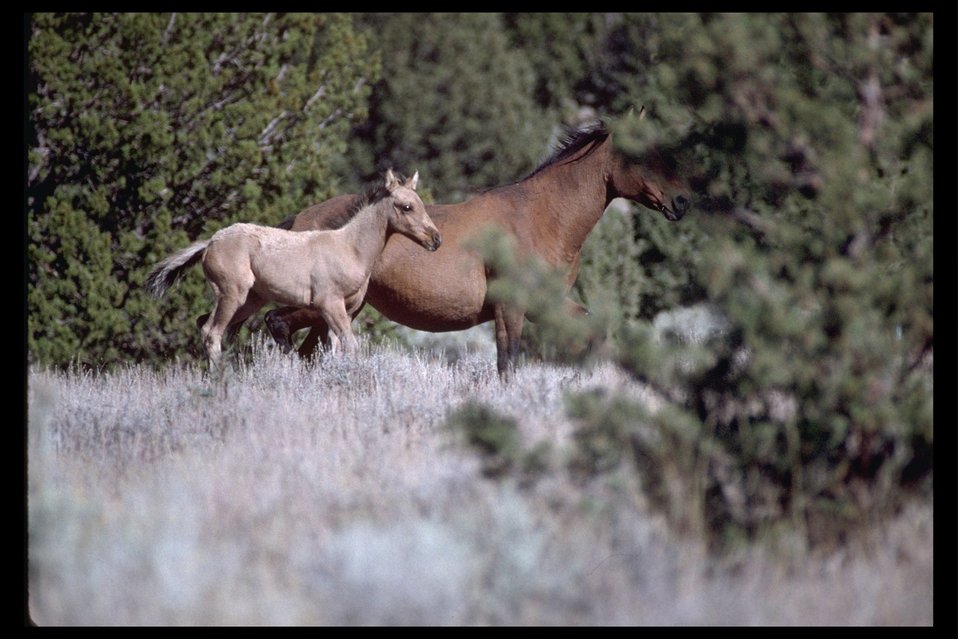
A pair of Kiger Mustang in Kiger HMA.